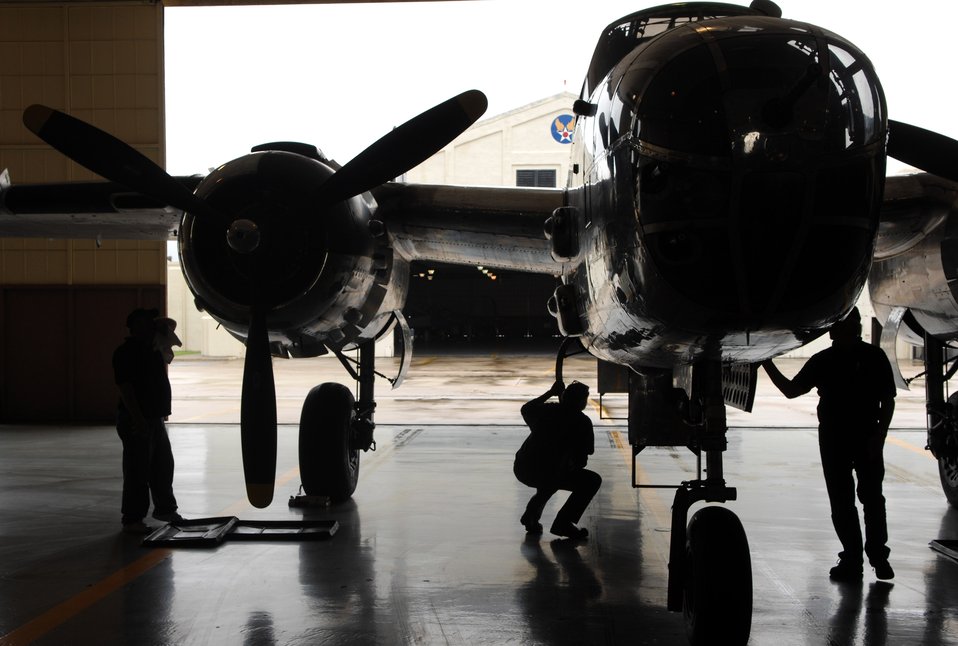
Doolittle Raiders 65th anniversary kicks off

Maintenance workers wipe down a B-25 Mitchell on display April 17 at Randolph Air Force Base, Texas. The plane was the backdrop for a ceremony honoring the Doolittle Raiders and the 65th Anniversary of the Doolittle raid.